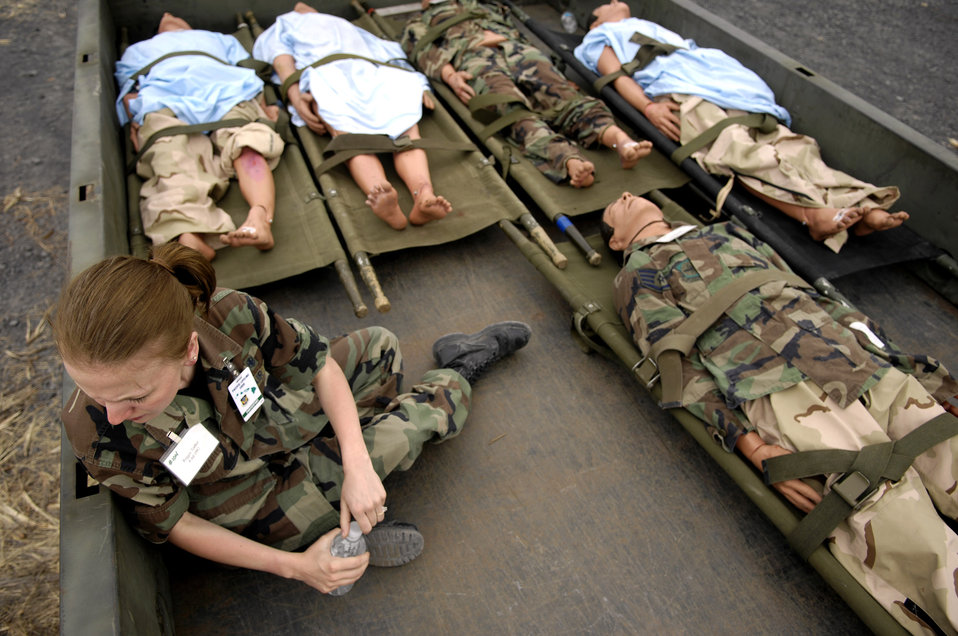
Providing a lifeline

A walking patient waits to be processed during Exercise Pacific Lifeline Feb. 5 at Kona International Airport, Hawaii. Pacific Lifeline is a total force exercise staging from three locations within the Hawaiian Islands. It provides approximately 900 Department of Defense members a test environment to rapidly deploy and provide time-critical services in the wake of a simulated natural disaster.